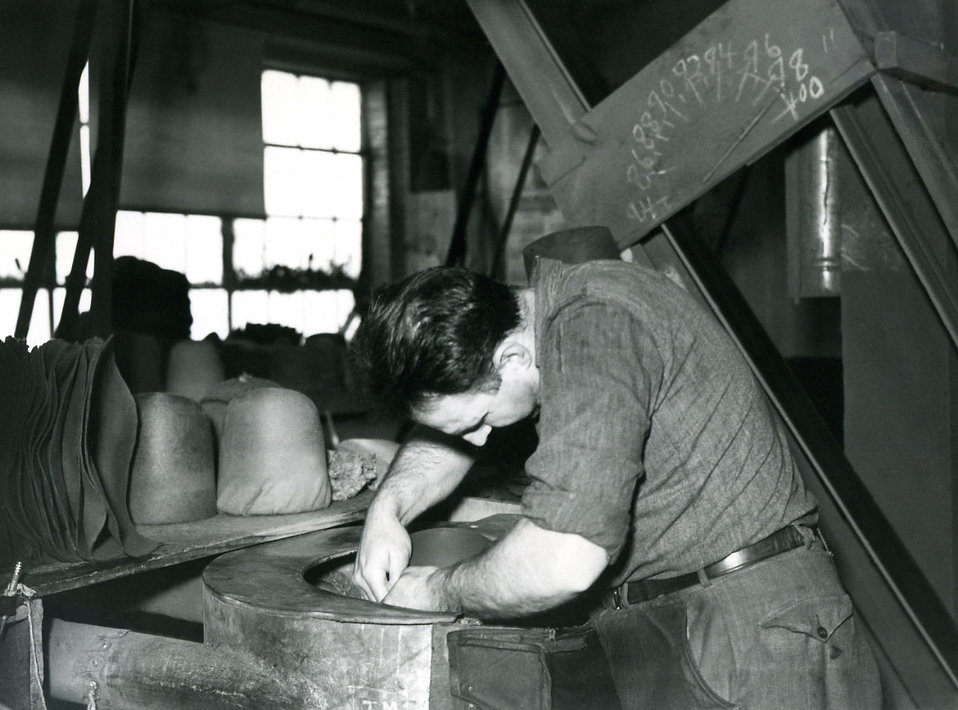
This photograph shows a man polishing, or 'pouncing' a hat in a felt hat-making factory where public health officials conducted numerous studies which focused on the effects of mercury upon workers who are exposed to this heavy elemental metal. (See complete series: PHIL ID#s: 6810 - 6813).